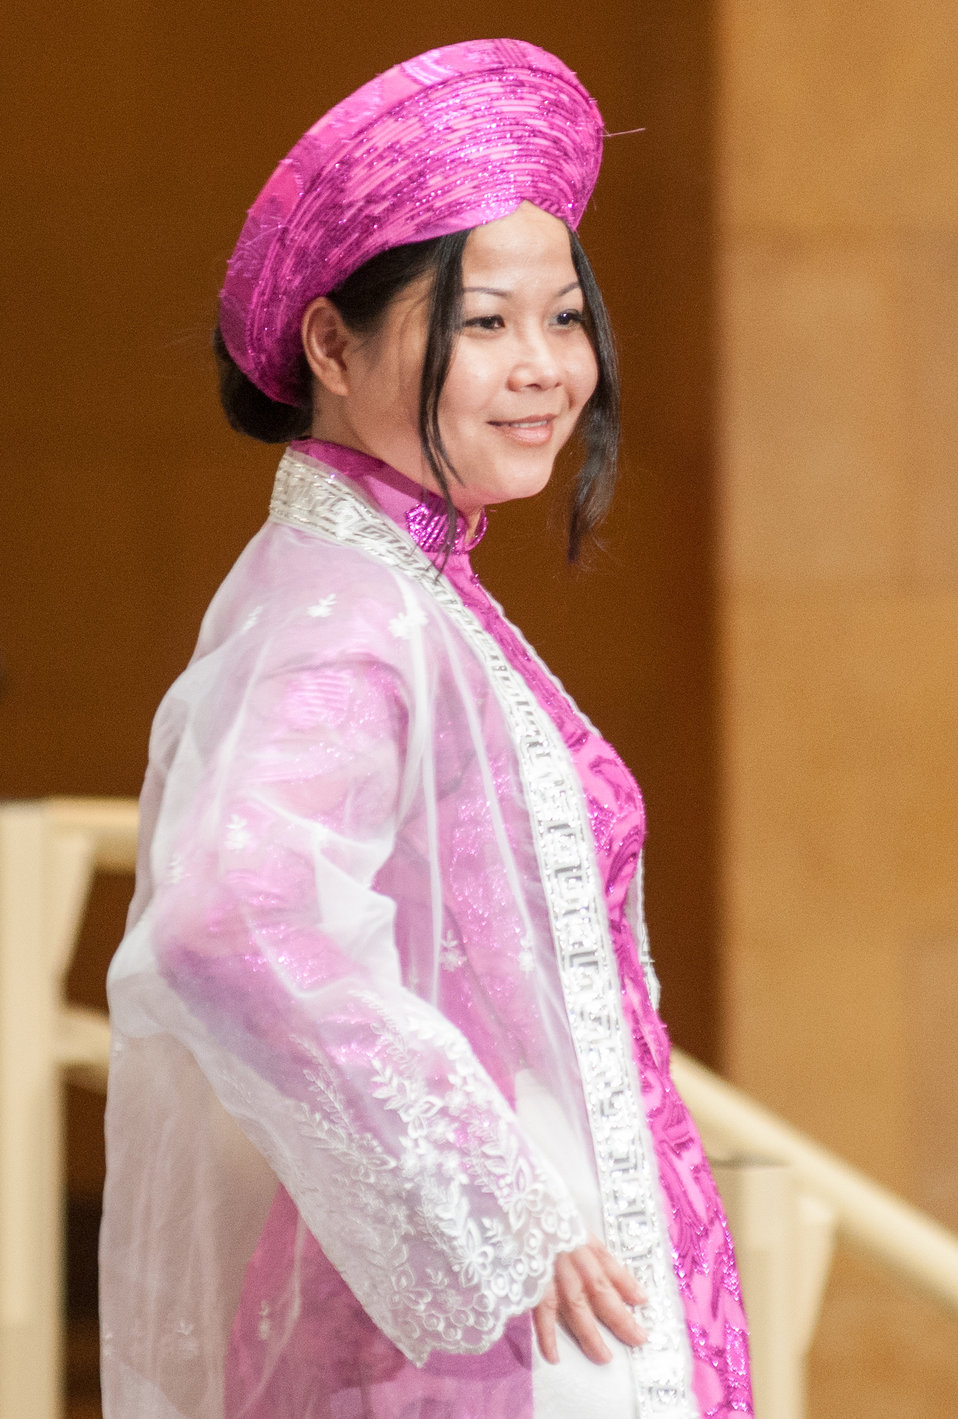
U.S. Department of Agriculture (USDA) National Agricultural Statistics Service’s (NASS) Nina Nguyen displays a Vietnamese traditional dress – Ao Dai, during a show of traditional clothing from various Asian Countries, during the U.S. Department of Agriculture (USDA) Asian Pacific American Heritage Month Observance, at the USDA headquarters, Whitten Building patio, in Washington, D.C., on Thursday, May 23, 2013. This year’s theme is “Building leadership; Embracing the Cultural Values and Inclusions.”